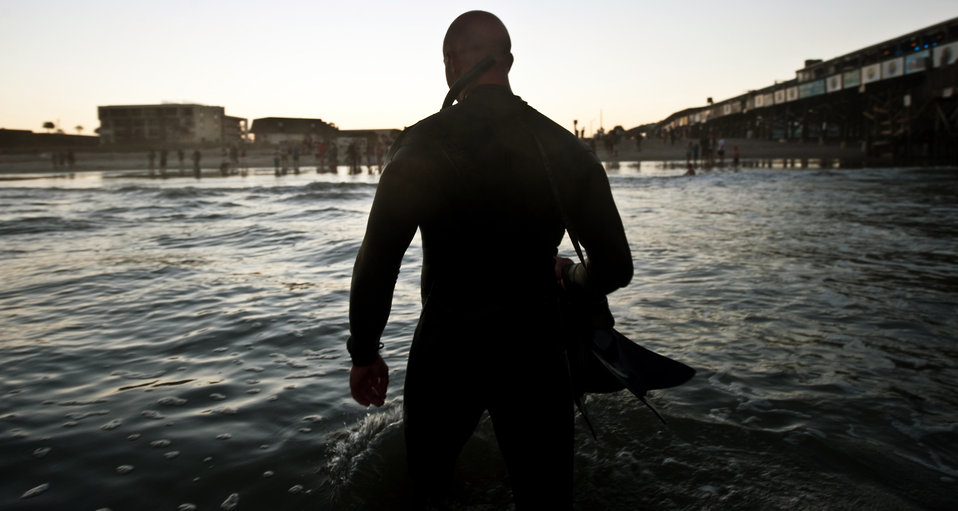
Pararescuemen demonstrate their skills during Air Force Week

Tech. Sgt. Wes Hufnagel emerges from the Atlantic Ocean after jumping from an HC-130P/N King during a freefall rescue demonstration Oct. 27, 2010 at Cocoa Beach, Fla. The demonstration was part of Air Force Week Cocoa Beach, a weeklong event showcasing Air Force capabilities and increase public awareness. Sergeant Hufnagel is assigned to the Air Force Reserve Command’s 920th Rescue Wing at nearby Patrick Air Force Base.